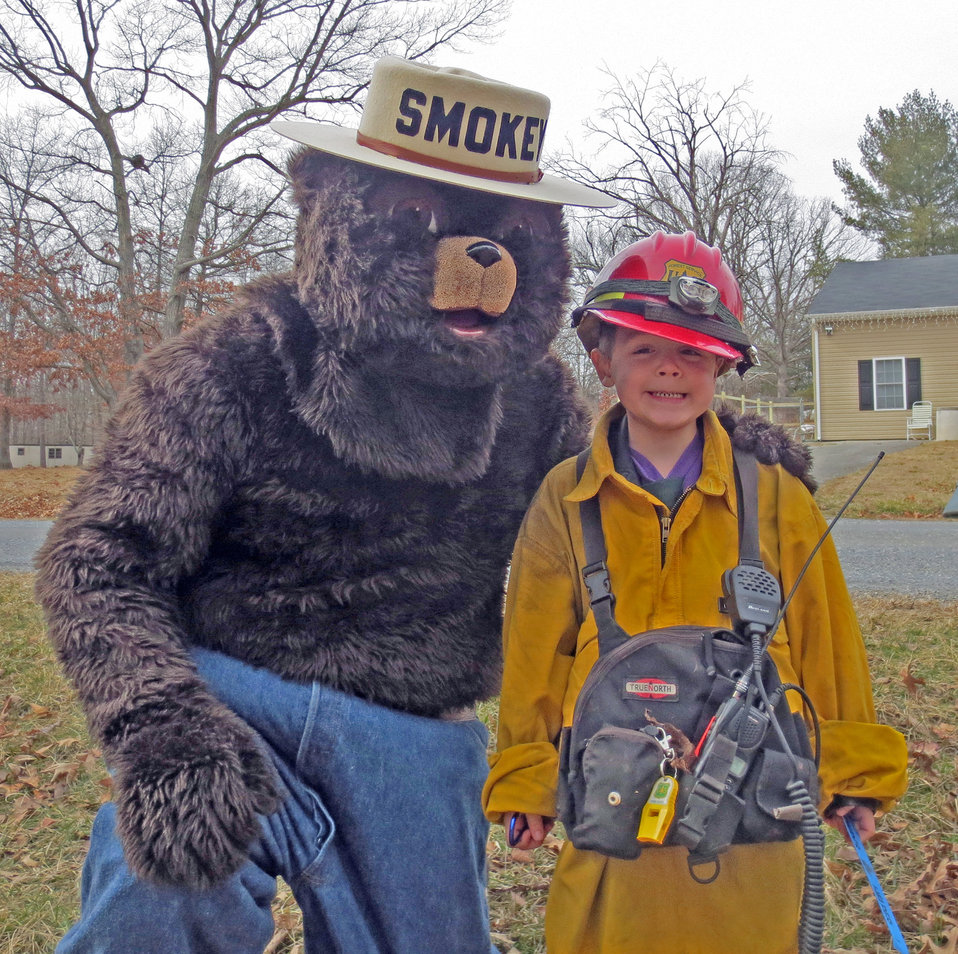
Nathan and Smokey a

Smokey Bear and six year old Nathan Norman share a moment together during visit to Nathan’s home in Rustburg, VA on Feb. 25, 2013.